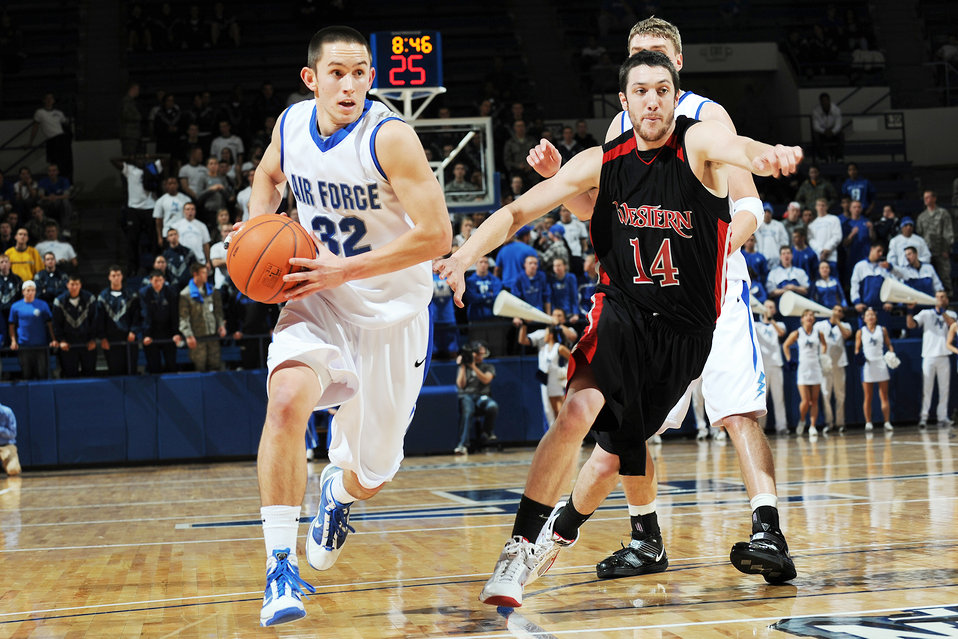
Falcons reign supreme in season opener

U.S. Air Force Academy Falcon sophomore guard Shawn Hempsey drives the lane while Western States Lachlan Kirwan defends during the Falcon season opener in Clune Arena at the Academy near Colorado Springs, Colo., Nov. 13, 2009.